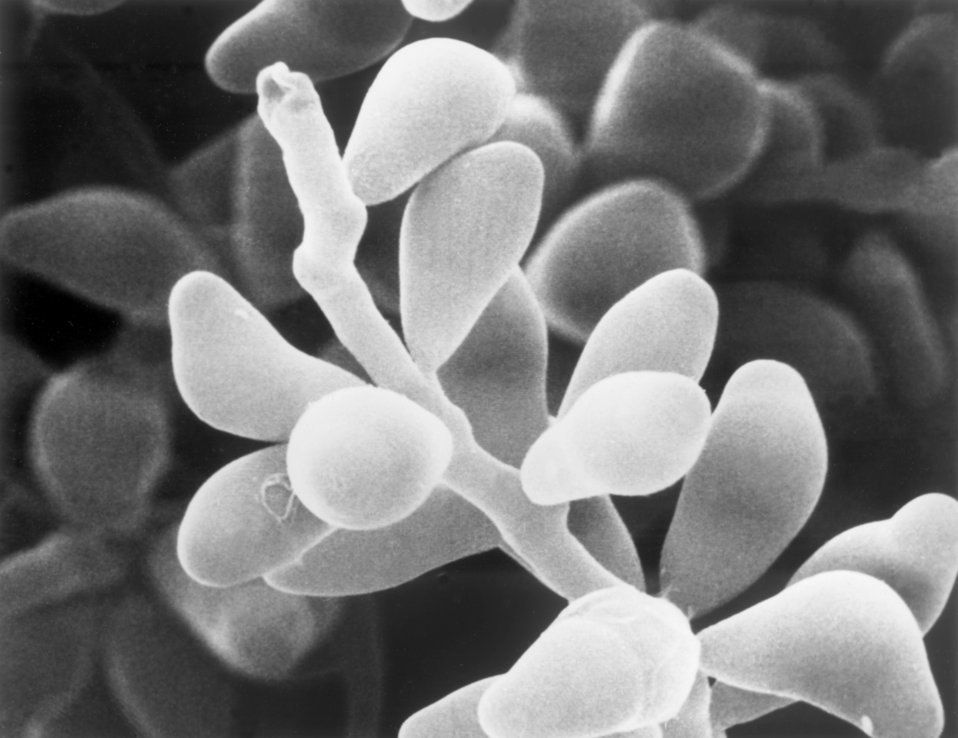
Scanning Electron Micrograph of Curvularia geniculata